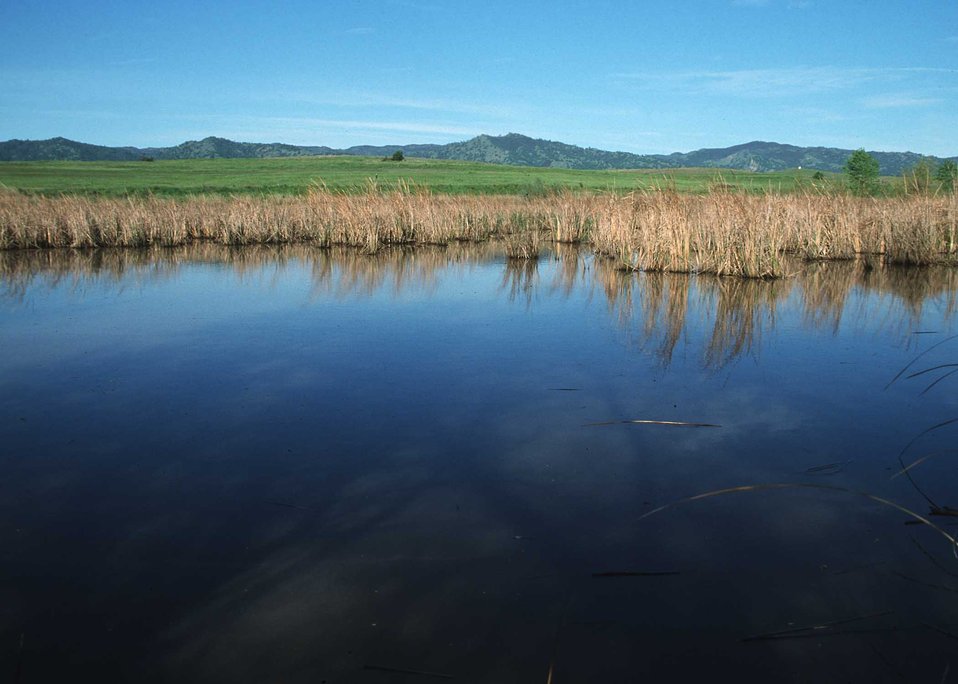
Restored wetland in Yolo County California.